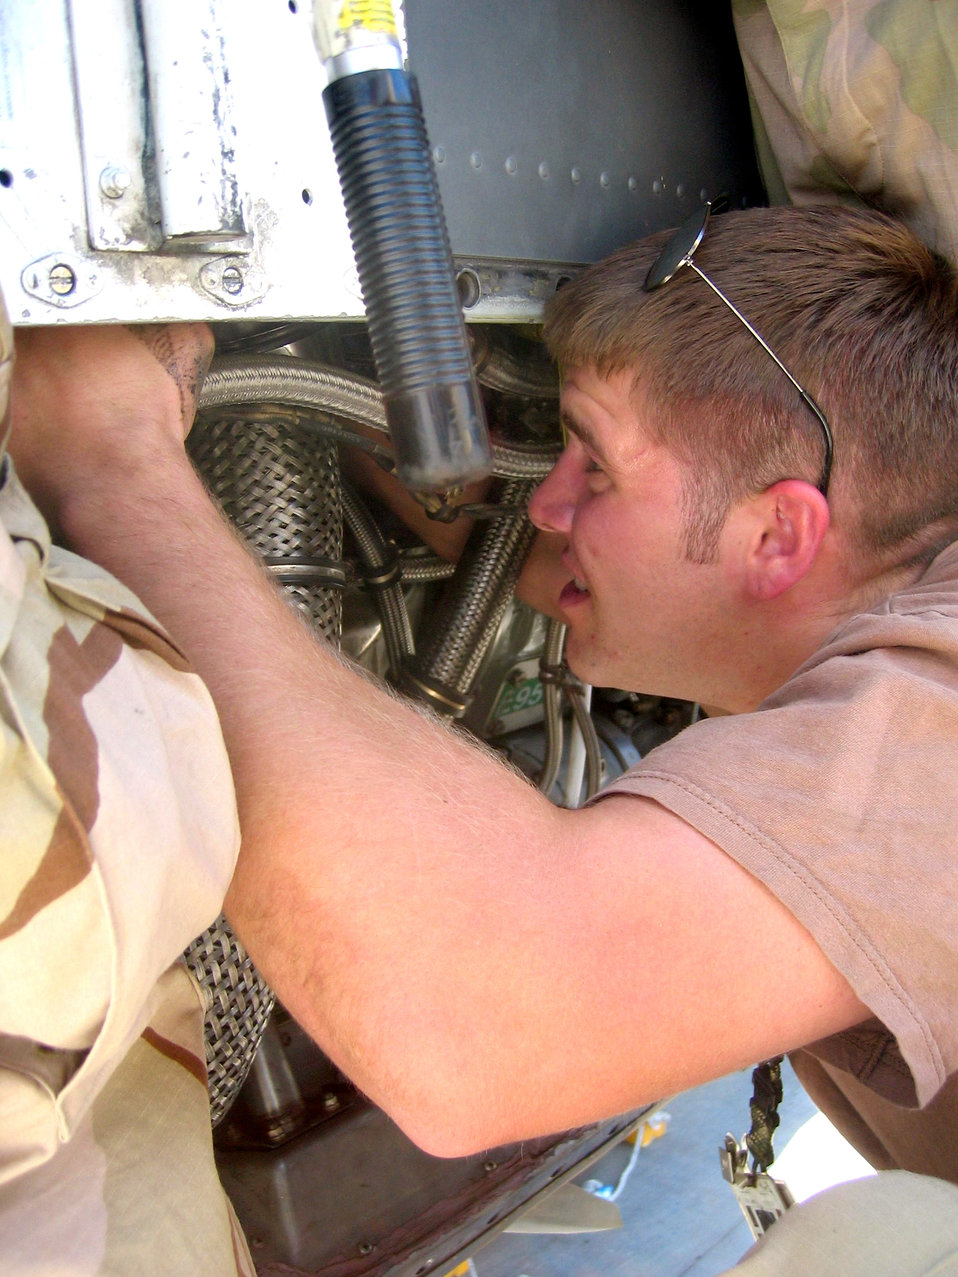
C-130 maintainers sustain mission readiness

KARSHI-KHANABAD AIR BASE, Uzbekistan -- Staff Sgt. William Dibble helps replace a generator on a C-130 Hercules engine here. He is a crew chief with the 774th Expeditionary Airlift Squadron's maintenance flight and is deployed from Elmendorf Air Force Base, Alaska.